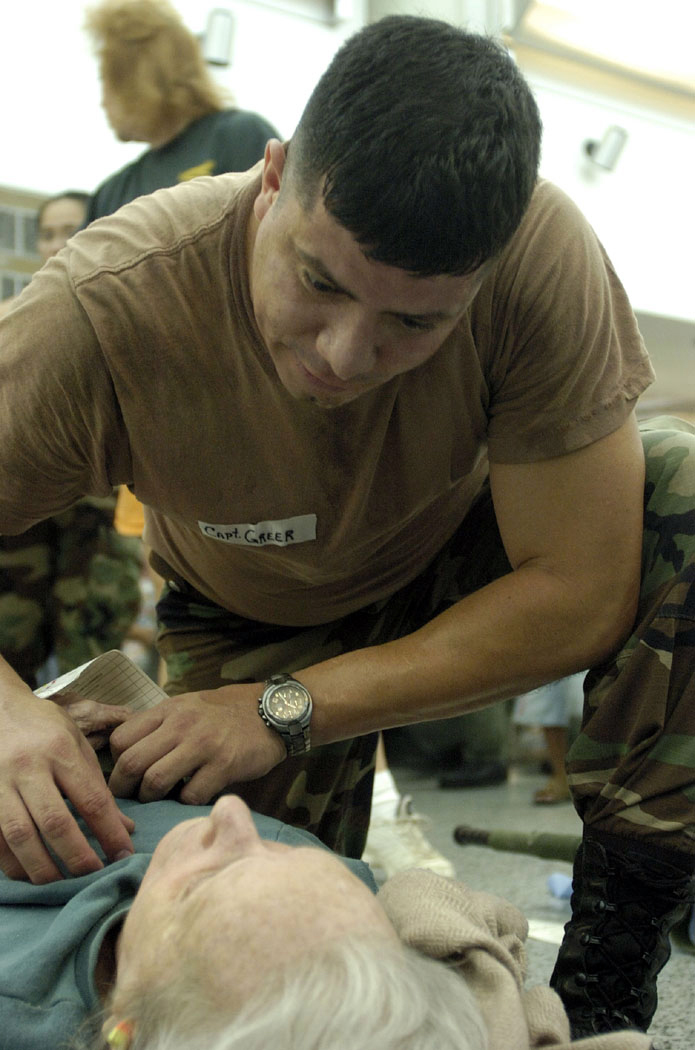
Air Force MASF is last stop for some hurricane victims in New Orleans

NEW ORLEANS -- Capt. Edward Greer comforts an elderly patient at the Louis Armstrong New Orleans International Airport moments before she is taken to an aircraft for evacuation Sept. 3. Captain Greer is a flight nurse with the 433 Air Evacuation Squadron at Lackland Air Force Base, Texas.